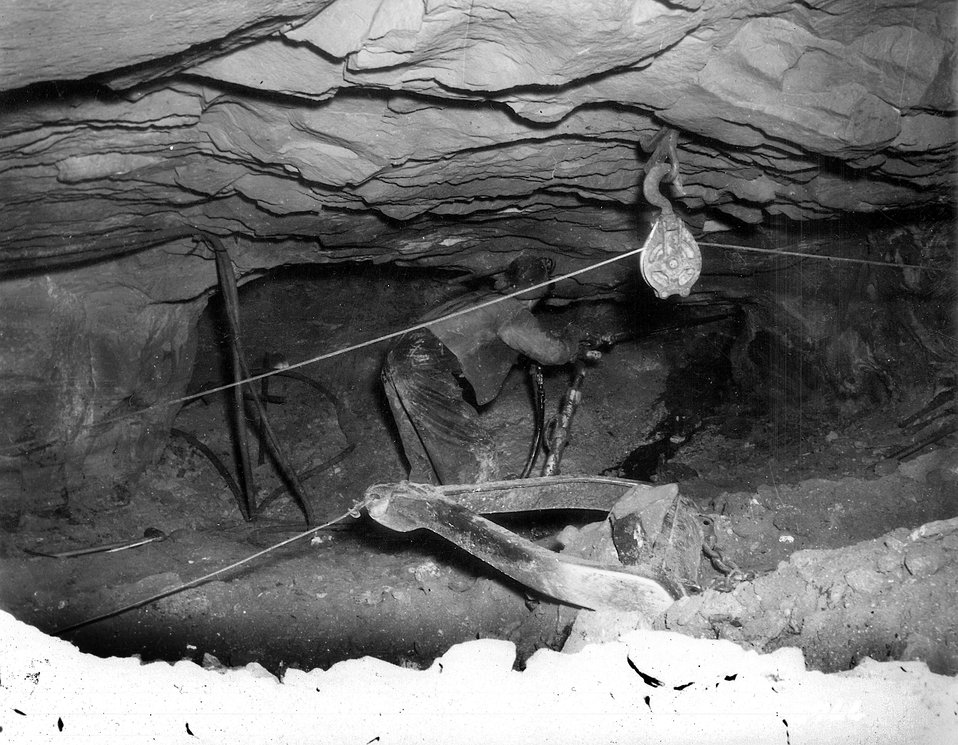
Drilling blast holes in thin-bedded uranium ore, with scraper in foreground. c. 1957